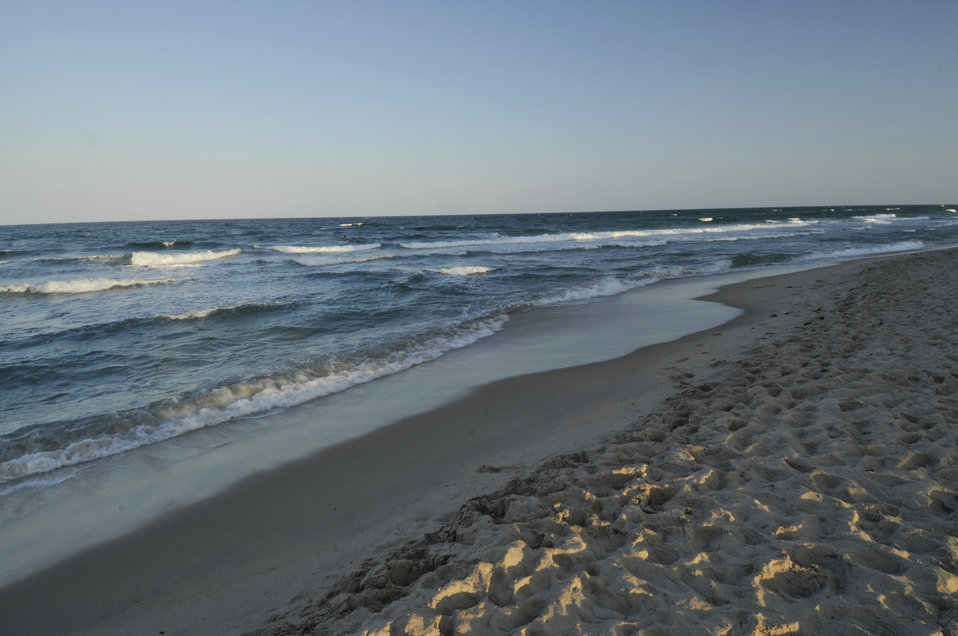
The sun sets on a beach in Miami, Florida on April 5, 2010.